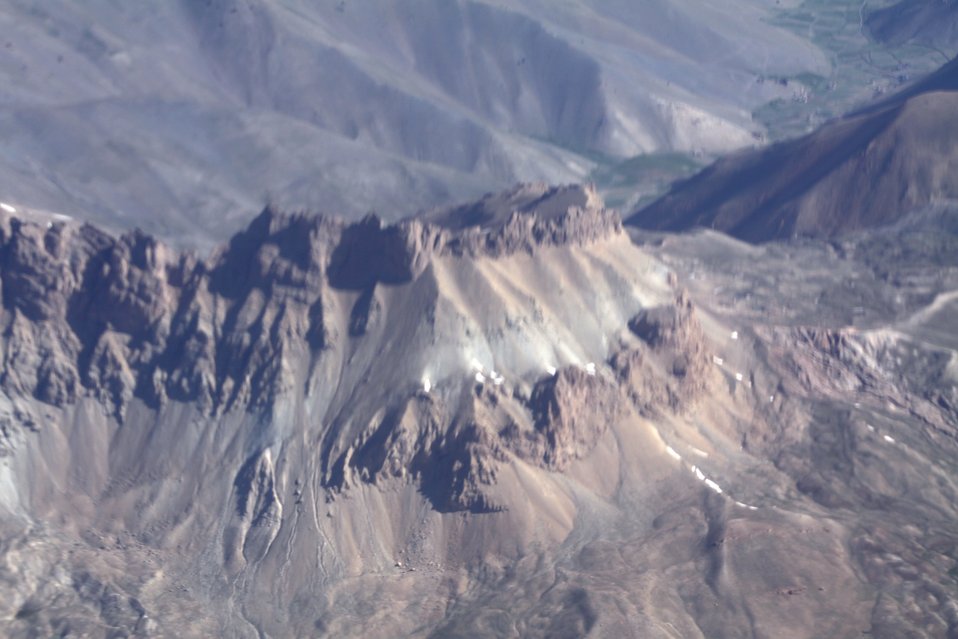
100525 Hirat Marble Conference 011